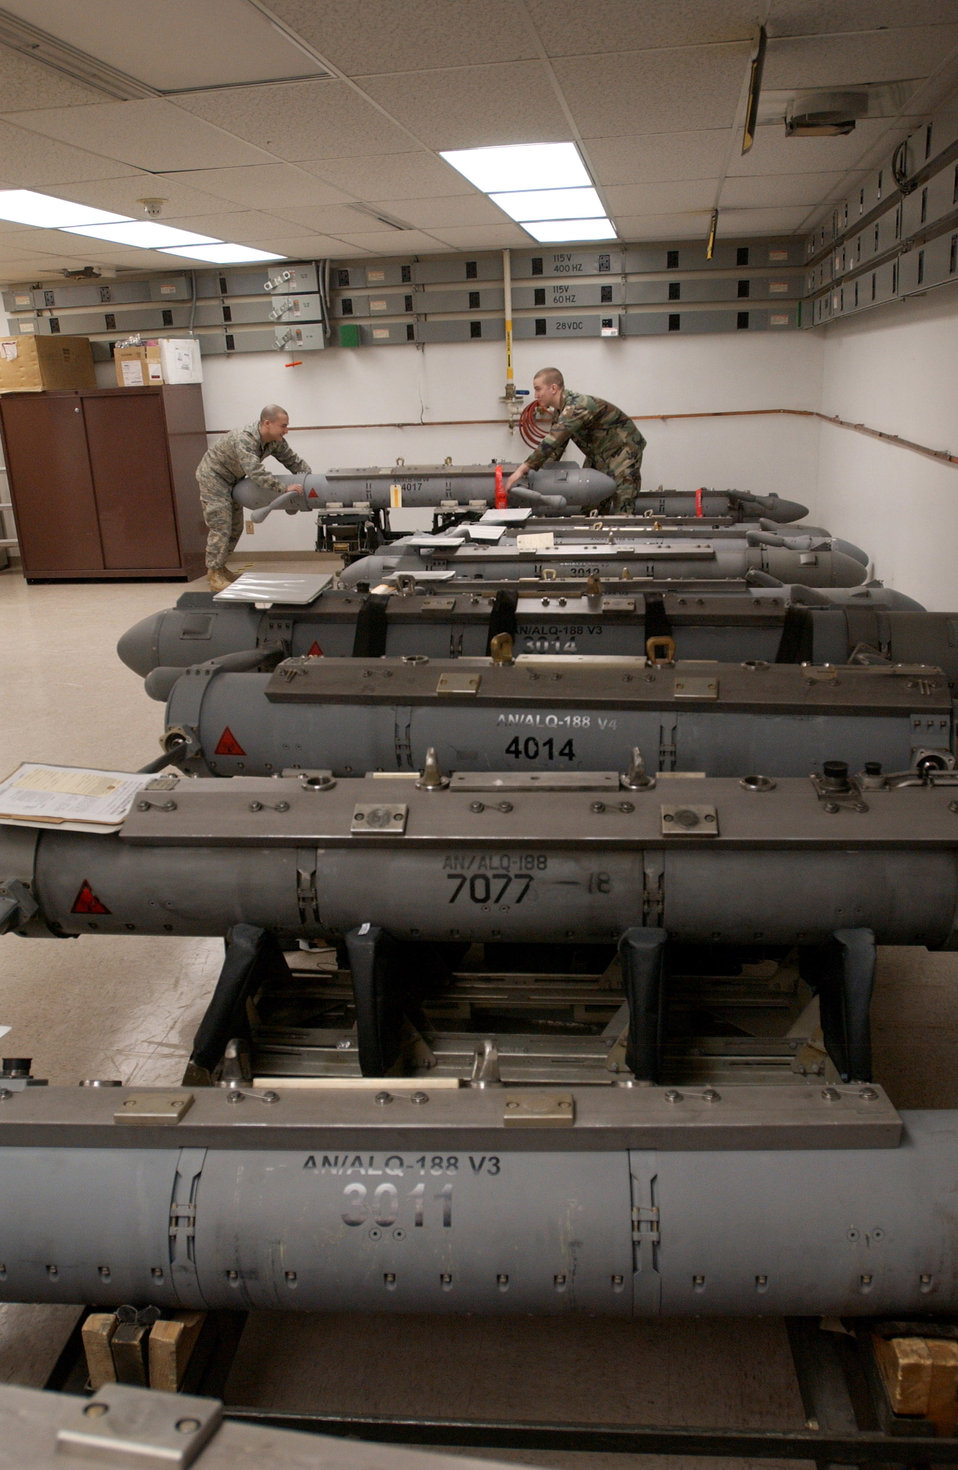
Electronic attack pod increases lethality

Senior Airman Frank Canfield and Airman 1st Class Timothy Ogburn wheel an electronic attack pod into the Avionics Flight for scheduled maintenance Feb. 27 at Eielson Air Force Base, Alaska. The pods provide an offensive electronic attack that degrades an enemy aircraft's radar. Airman Canfield is an avionics sensors journeyman and Airman Ogburn is an electronic warfare journeyman. Both are assigned to the 354th Maintenance Squadron.